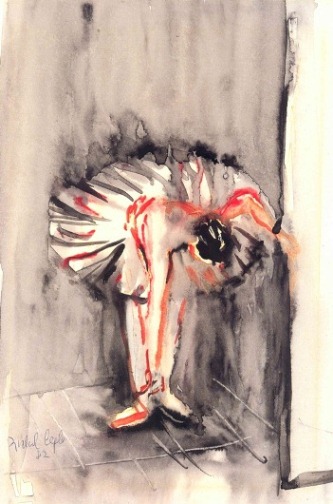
עברית: rachelceglaberlinexb